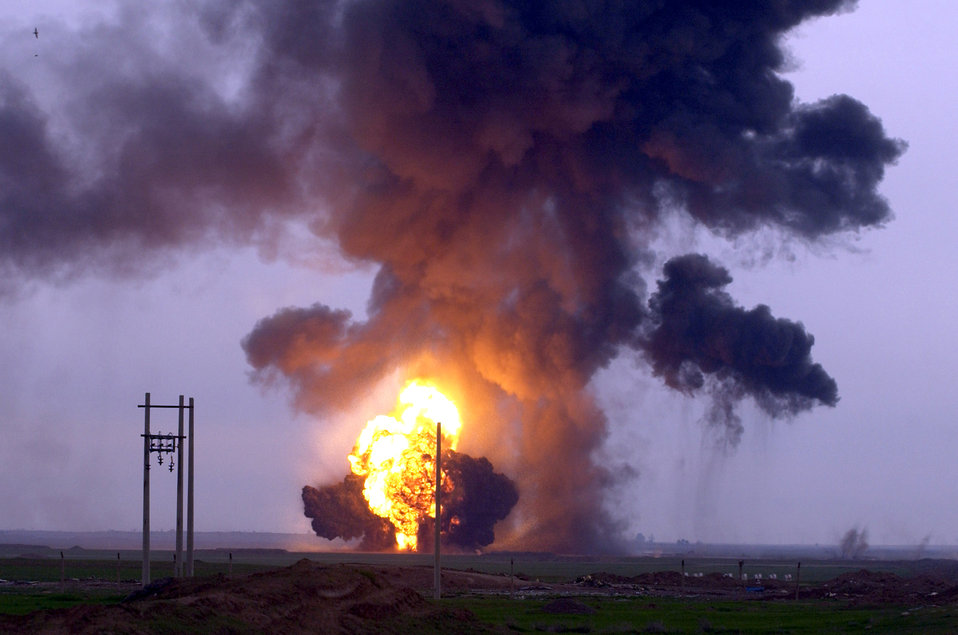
Ka-boom!

AL FATHAH AIR FIELD, Iraq -- Explosions rock the ground here as Army engineers and Air Force explosive ordnance disposal workers detonate a weapons cache Feb. 5. An estimated 2 million net pounds of explosives were left at the air field by the old regime, making it the largest single weapons cache uncovered by the coalition to date. Workers are destroying an average of 100,000 pounds of weapons per day.